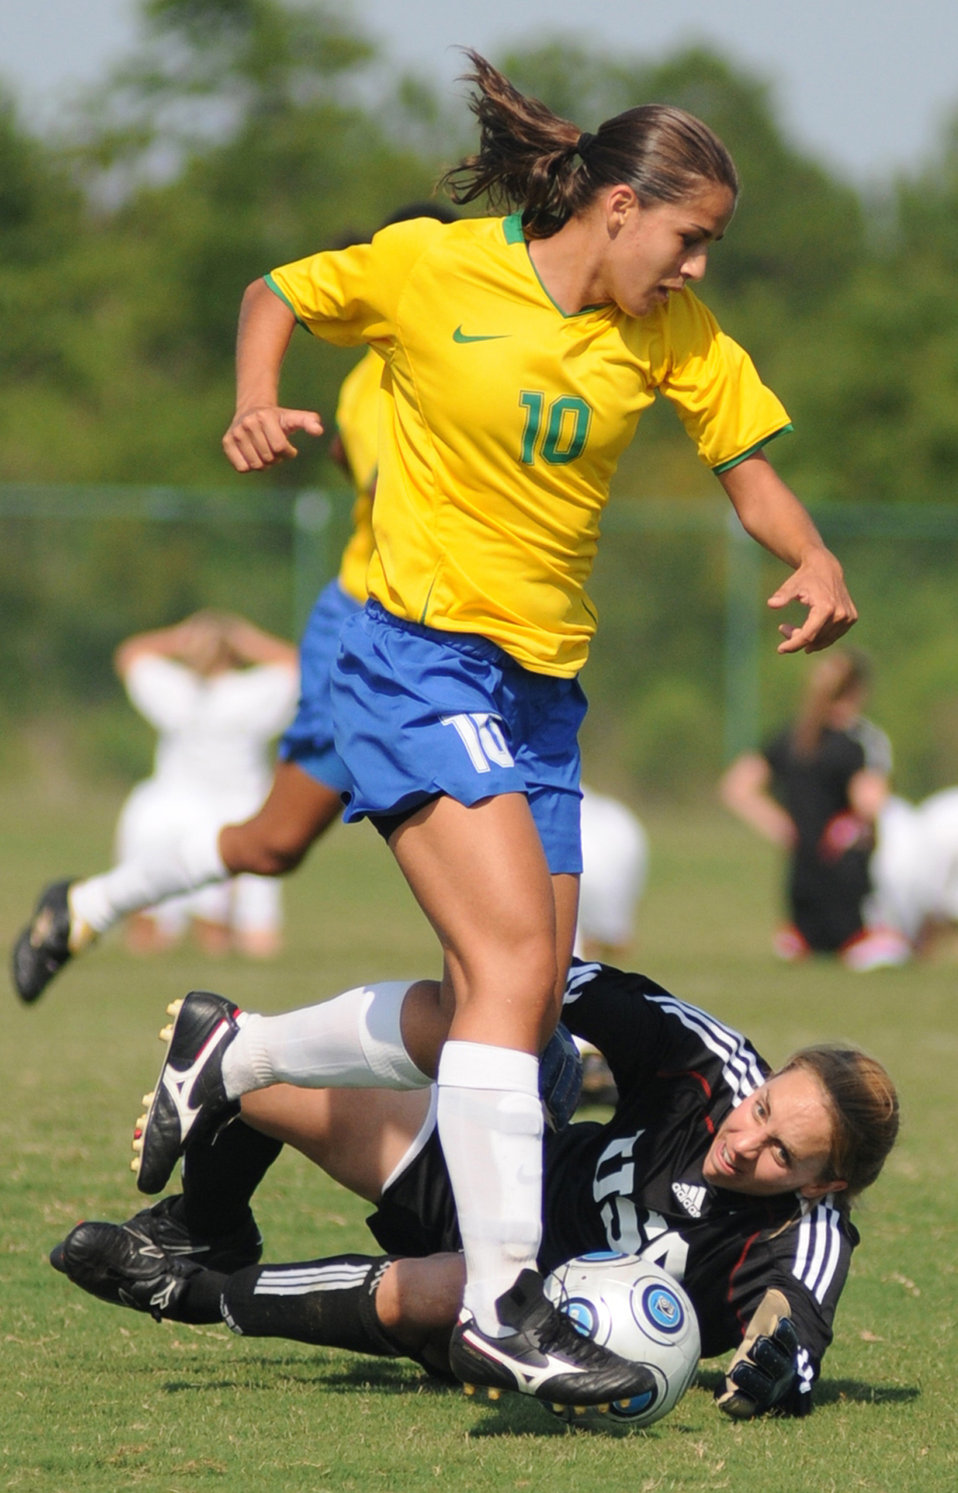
Brazil wins World Military Women's Soccer Championship at Keesler

Brazil's Rebeca Lopez De Oliveira gets the ball past the United States' Marietta Squire to score in a June 9 game at Gulfport's Sport Complex in Mississippi. Brazil won 3-0 at the 5th Counseil Du International Sports Militaire World Military Women's Soccer Championship hosted by Keesler Air Force Base at the Biloxi High School Stadium and Gulfport Sports Complex.